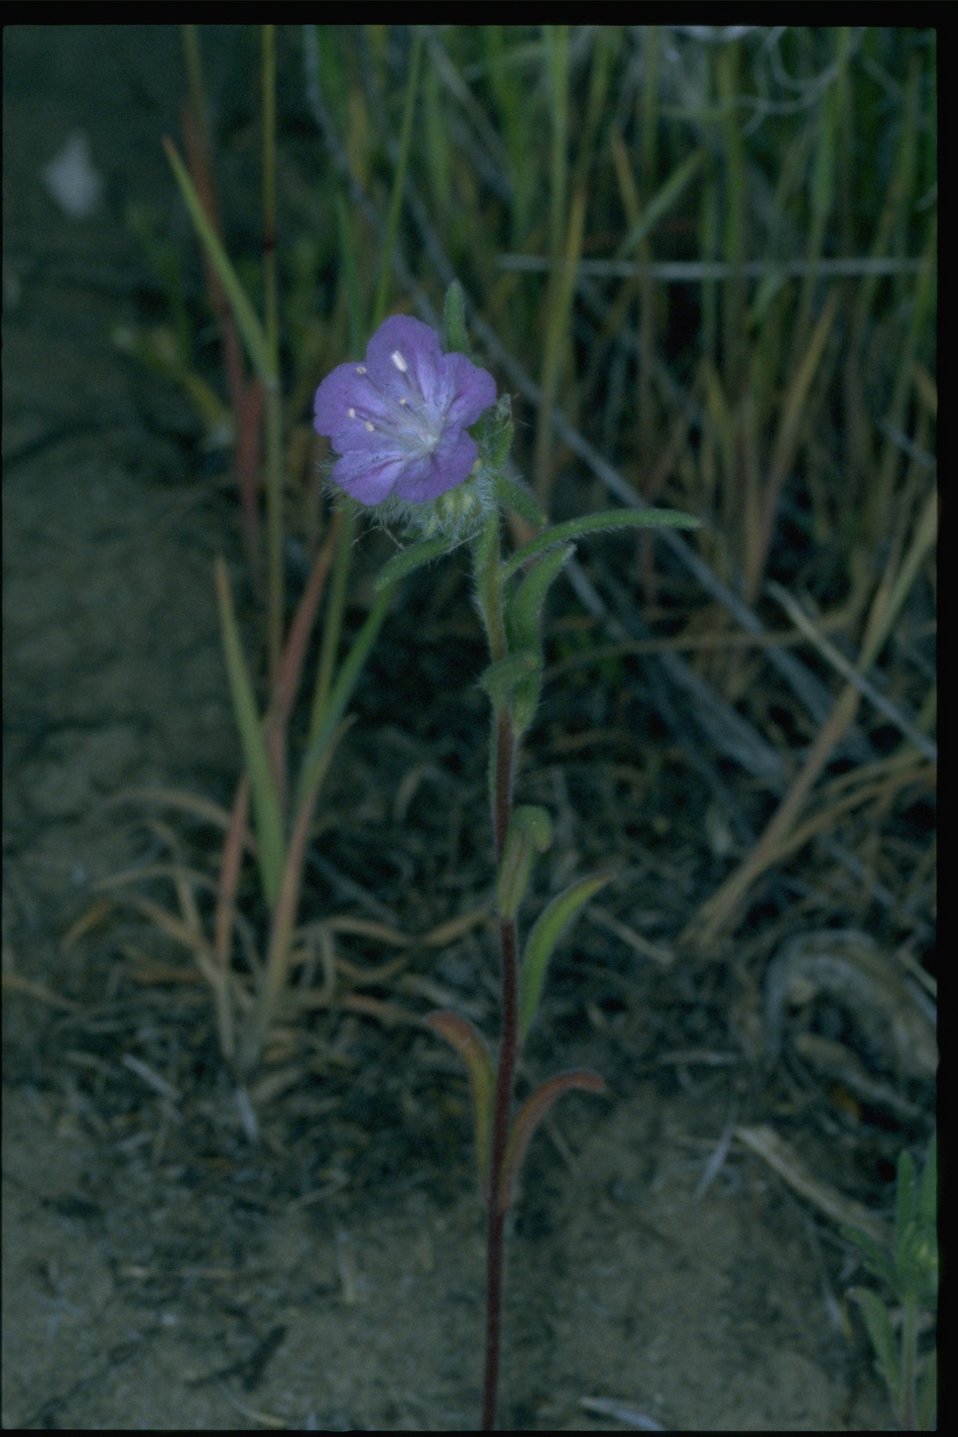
Medium shot of Phacelia wildflower.